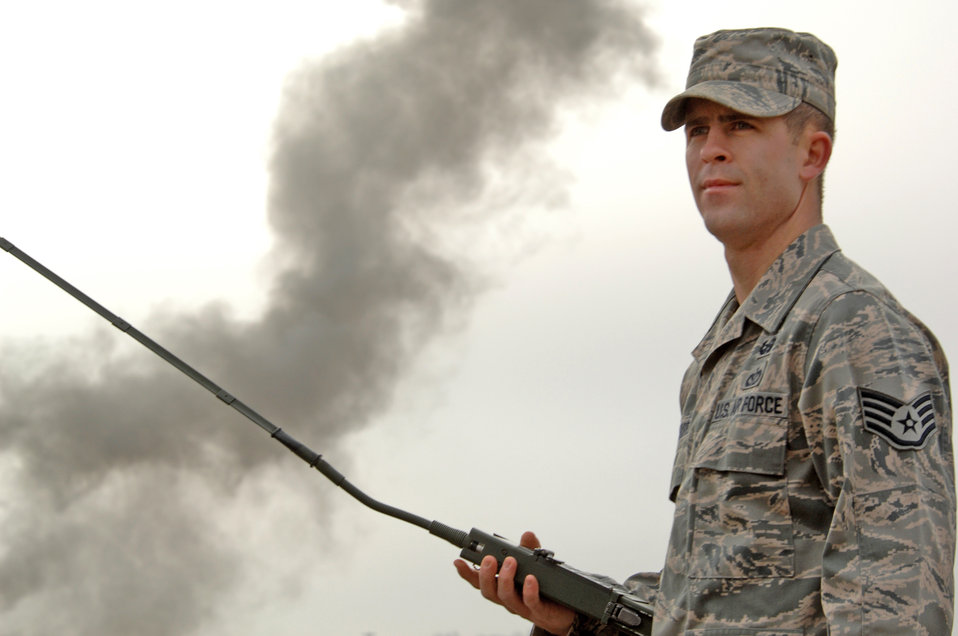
Whiteman Airman shares deployment experience

Staff Sgt. Brandon Pfannenstiel uses a remote firing device to set off C-4 during a training session Jan. 19, 2010, at Whiteman Air Force Base, Mo. Sergeant Pfannenstiel is a 509th Civil Engineer Squadron explosive ordnance device technician.